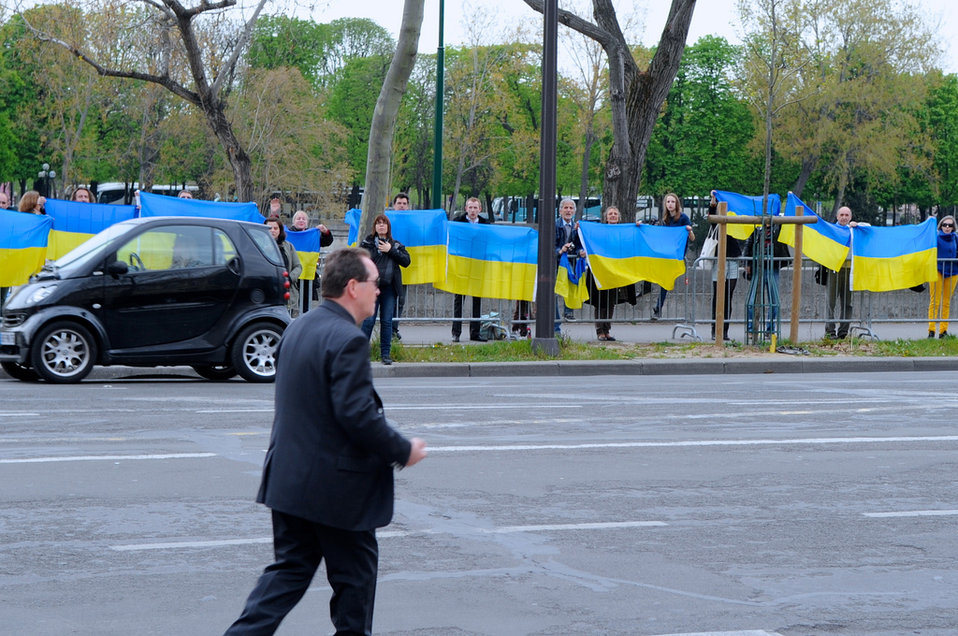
Pro-Ukraine Supporters Shout Encouragement to Secretary Kerry Outside French Foreign Ministry

Supporters of Ukraine who shouted encouragement to U.S. Secretary of State John Kerry as he left the Quai d'Orsay - the French Foreign Ministry - in Paris on March 30, 2014, to meet with Russian Foreign Minister Sergey Lavrov about Ukraine.